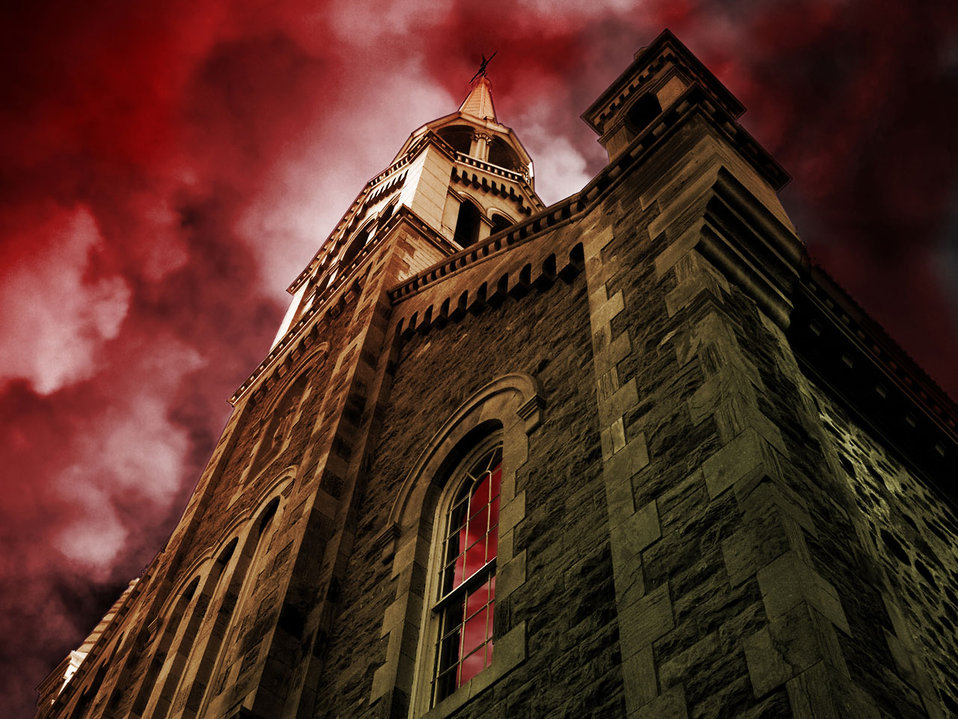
Apocalypse

Church at the end of the day. 2 of my photos together..